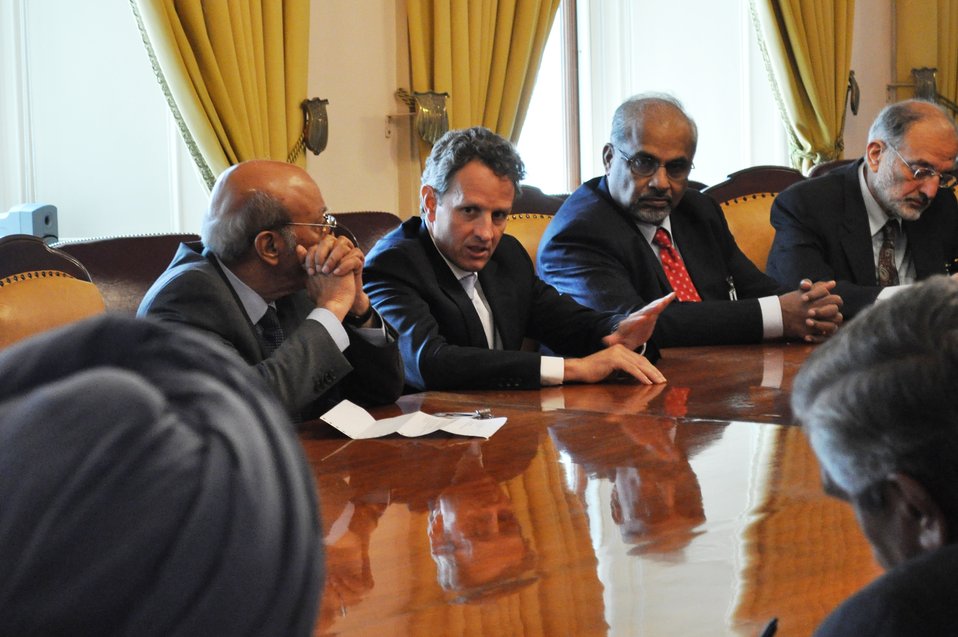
Secretary Geithner meeting with Indian delegation of the U.S.-India Aspen Strategy Group, 8/3/2010

On Tuesday, August 3, 2010, Secretary Tim Geithner met with the Indian delegation of the U.S.-India Aspen Strategy Group to discuss economic and other policy priorities between our two nations. The delegation discussed a broad range of issues including the G-20’s commitment to create strong, sustainable and balanced global growth.